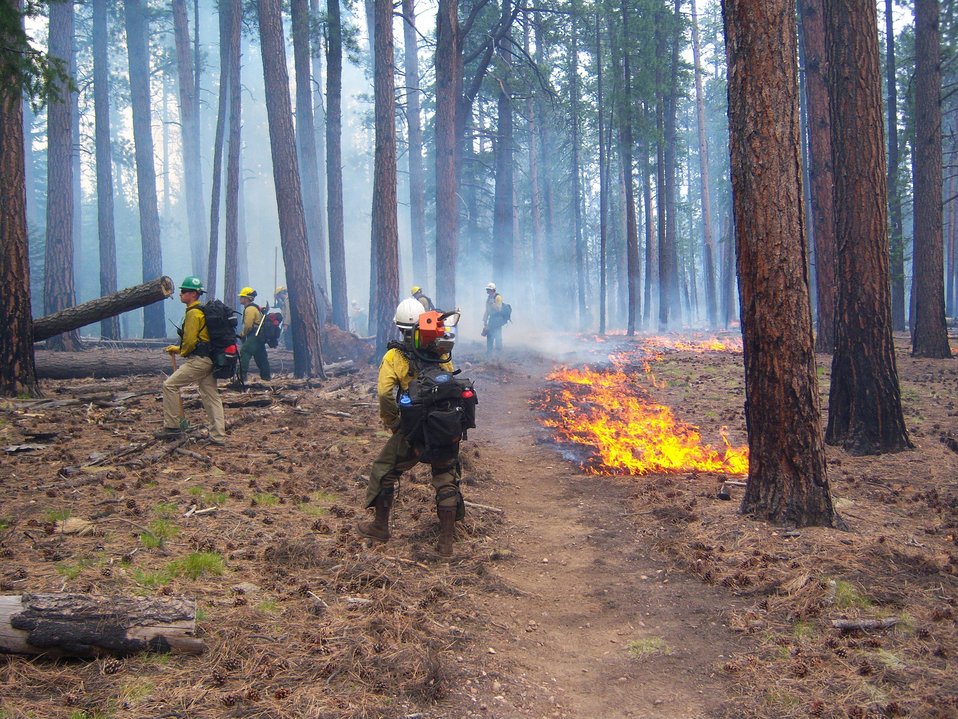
This burnout operation at the Galahad Fire was conducted on May 29, 2014 to protect the Mexican Spotted Owl habitat, in mixed conifer forest located in the northeast portion of the fire, as well as providing structure protection for the cabin. The Galahad Fire on the North Rim on the Walla Valley Peninsula in the Grand Canyon National Park in Arizona began on May 23, 2014 from lightening and has consumed 2, 950 acres to date and is 30% contained.